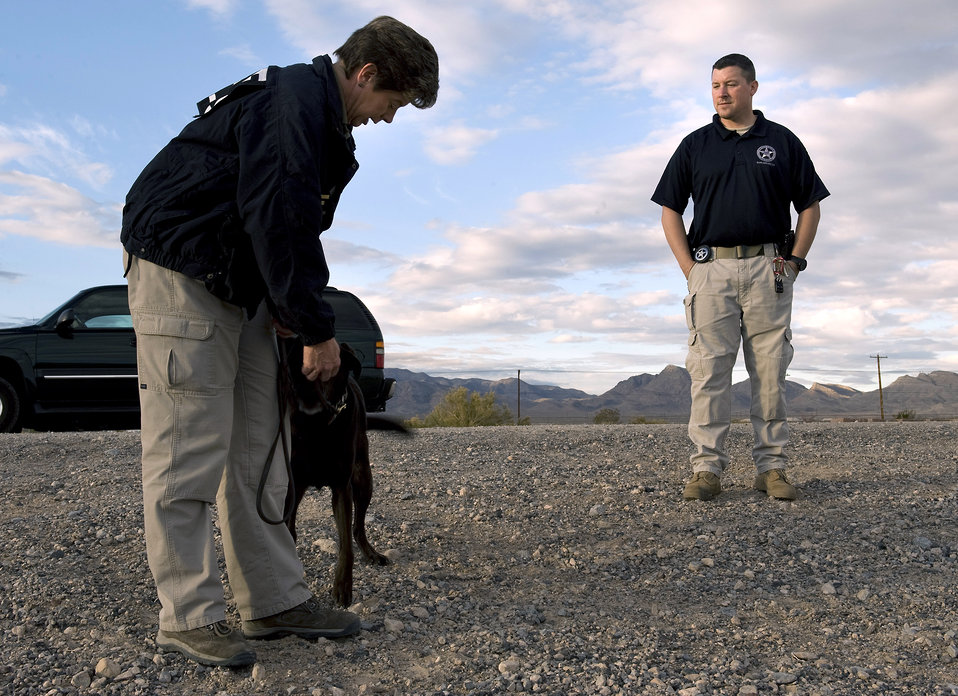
Nellis AFB officials host joint training exercise for local canine units

Jon Minnich discusses different explosive odor combinations with Lauren Marakas Dec. 16, 2010, at Nellis Air Force Base, Nev., during a joint explosive detection training exercise. Mr. Minnich is a U.S. Marshals Service explosive detection canine handler, and Mrs. Marakas is a senior special agent canine handler from the Bureau of Alcohol, Tobacco, Firearms, and Explosives.